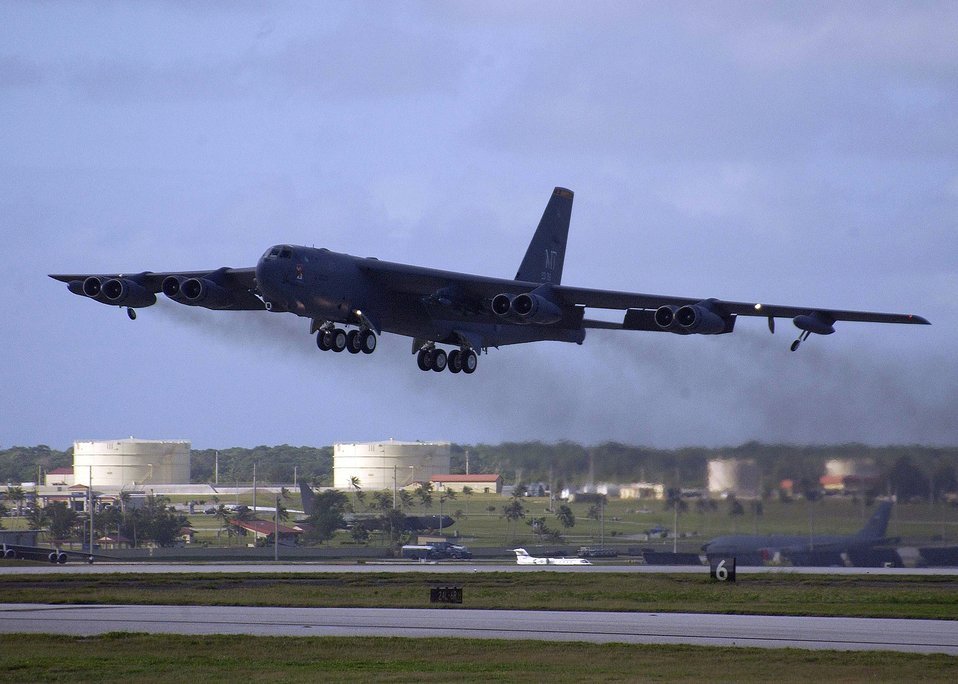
Warbird in Flight

A 23rd Expeditionary Bomb Squadron B-52 Stratofortress departs on a counter-sea training mission during one of the final sorties of a five-month deployment to Andersen Air Force Base, Guam, Jan. 15. The counter-sea exercise concluded a five-month deployment to Andersen AFB in which the 23rd EBS flew over 200 missions, logged nearly 1,600 hours and dropped 750 munitions. The B-52s were at Andersen promoting regional security and preserving regional stability while providing the U.S. Pacific Command commander a continuous bomber presence in the region.